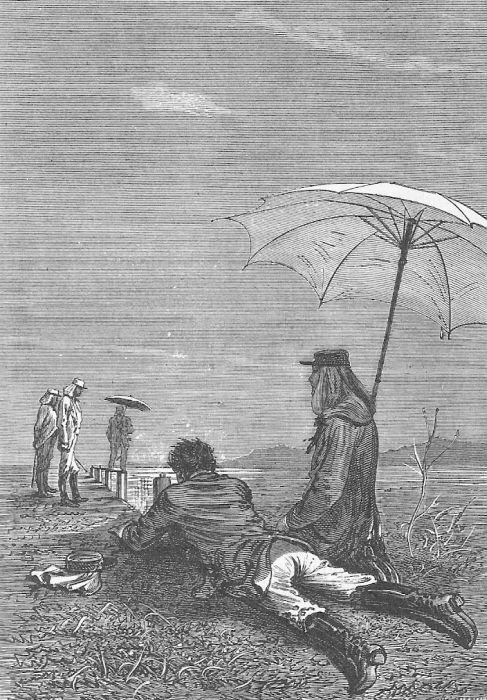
An illustration from Jules Verne's novel 'The Adventures of Three Englishmen and Three Russians in South Africa' (1870) drawn by Jules Férat. Polski: Ilustracja powieści Juliusza Verne'a 'Przygody trzech Rosjan i trzech Anglików w południowej Afryce' (1870) autorstwa Julesa Férata. Français : Jules Verne: 'Aventures de trois russes et de trois anglais dans l’Afrique australe' (1870), dessins par Jules Férat.